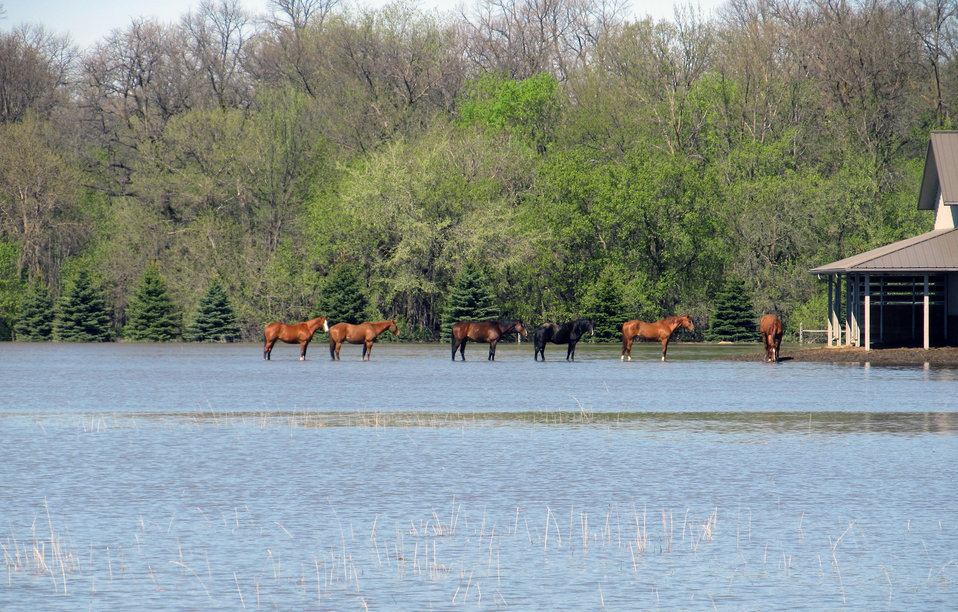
Flooding and water damage in the Park and Tongue River Watersheds located in Cavalier, Pembina and Cavalaier Counties in ND on Thursday, May 23, 2013.